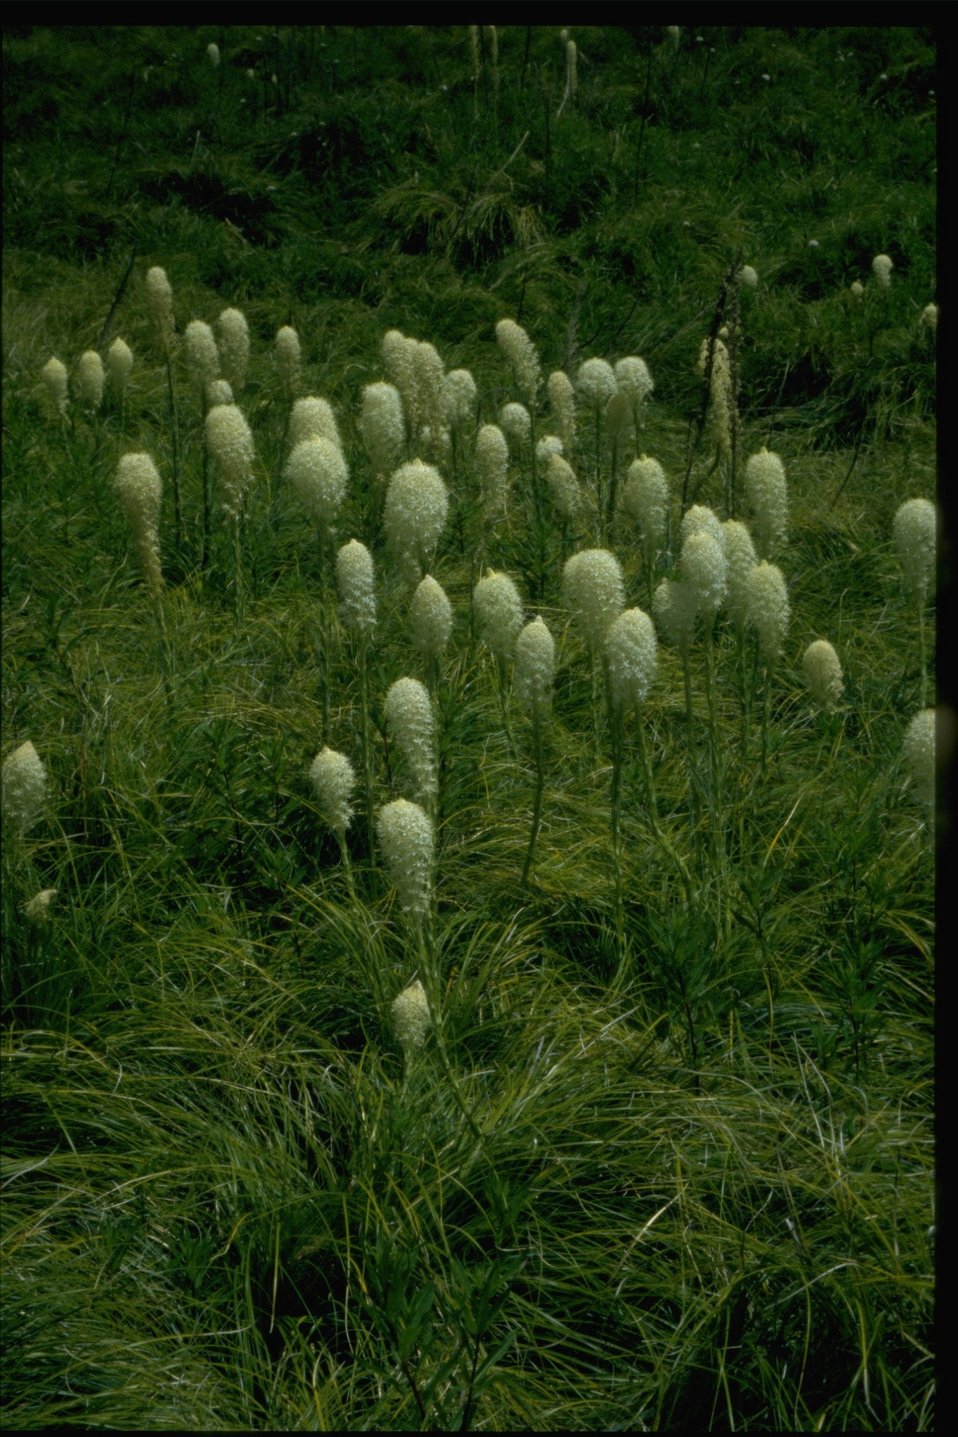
Medium shot, field of Xenophyllum tenax.